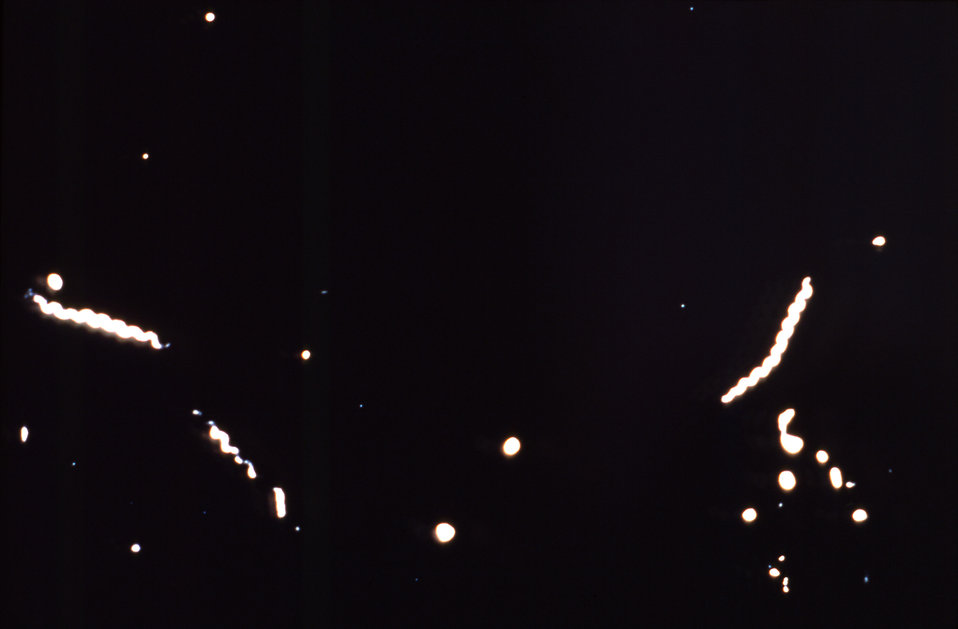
Using a 'darkfield' microscopy technique, this photomicrograph revealed the presence of Treponema pallidum spirochetes, which are the bacterial agents responsible for causing syphilis.